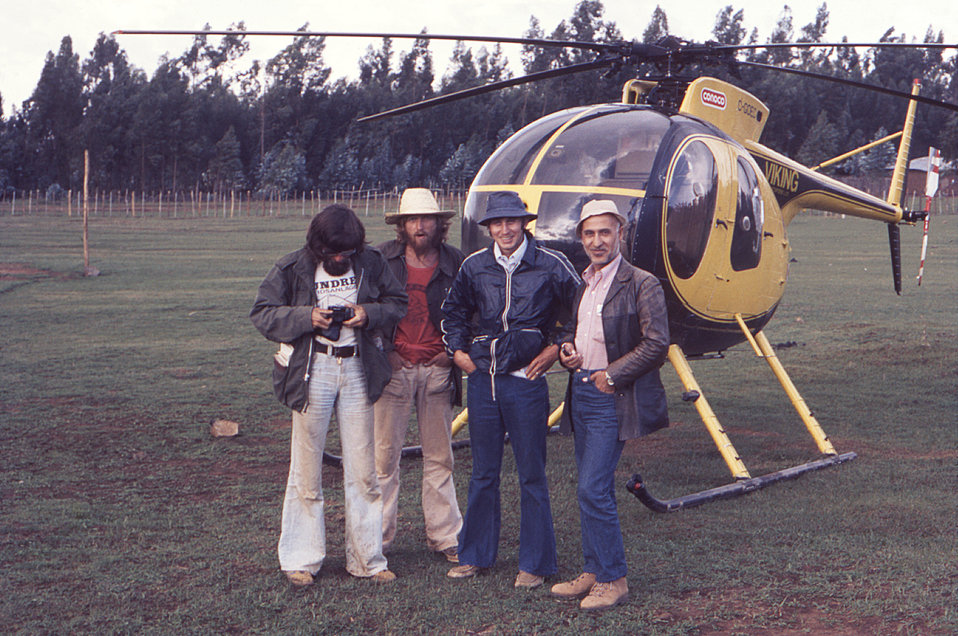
This June, 1976 photograph, depicted four physicians who were participating in the worldwide smallpox eradication efforts. The doctors were shown standing in front of their helicopter transport in Debre Tabor, Ethiopia, which is also known as Samara. At an altitude of 8,500 feet, from left to right was Dr. Rotmil, Dr. Buloe, the pilot known as Smith, and Dr. Shafa.